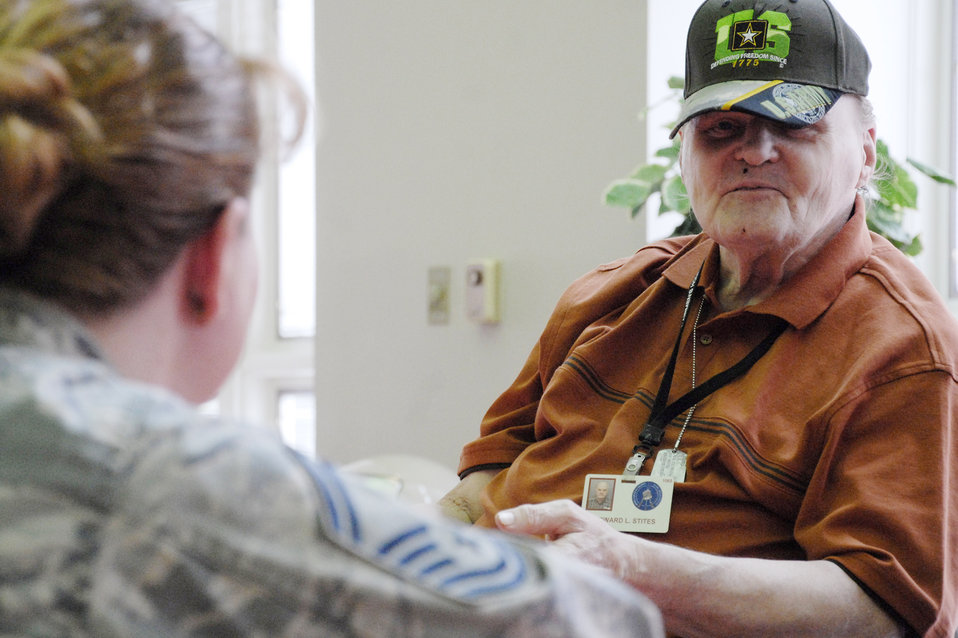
Joint Enlisted Council lift spirits at veterans home

Senior Master Sgt. Cheryl Toner chats with Edward Stites Oct. 16, 2009, during a visit to the U.S. Soilder's and Airmen's Home in Washington, D.C. Sergeant Toner made the visit with the National Capital Region Joint Enlisted Council to lift the spirits of the residents.